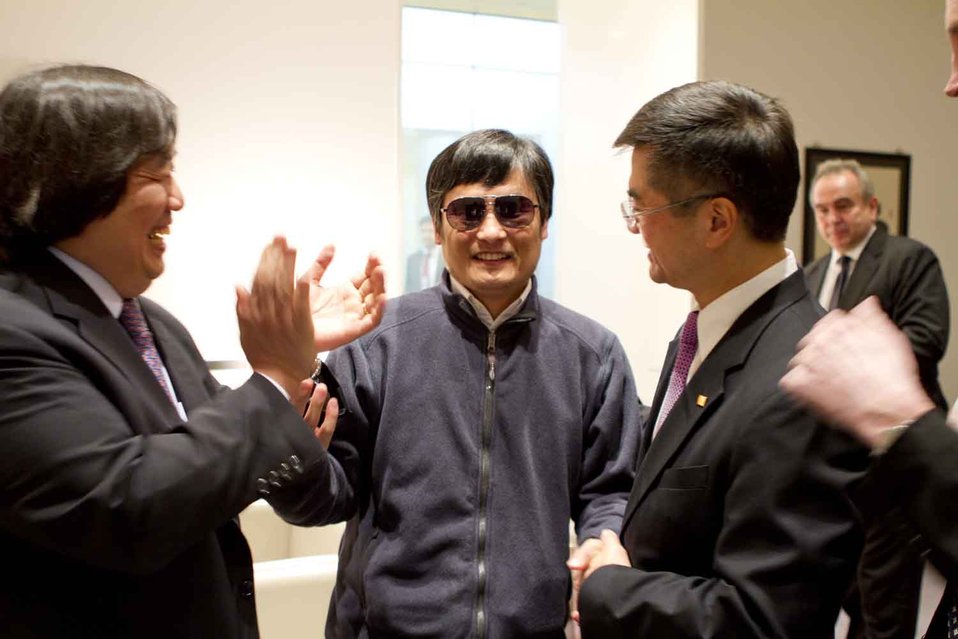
Ambassasdor Locke and Legal Adviser Koh With Chen Guangcheng

U.S. Ambassador to China Gary Locke, right; Legal Adviser of the U.S. Department of State, right; with Chen Guangcheng, center; at the U.S. Embassy in Beijing, China, on May 1, 2012.